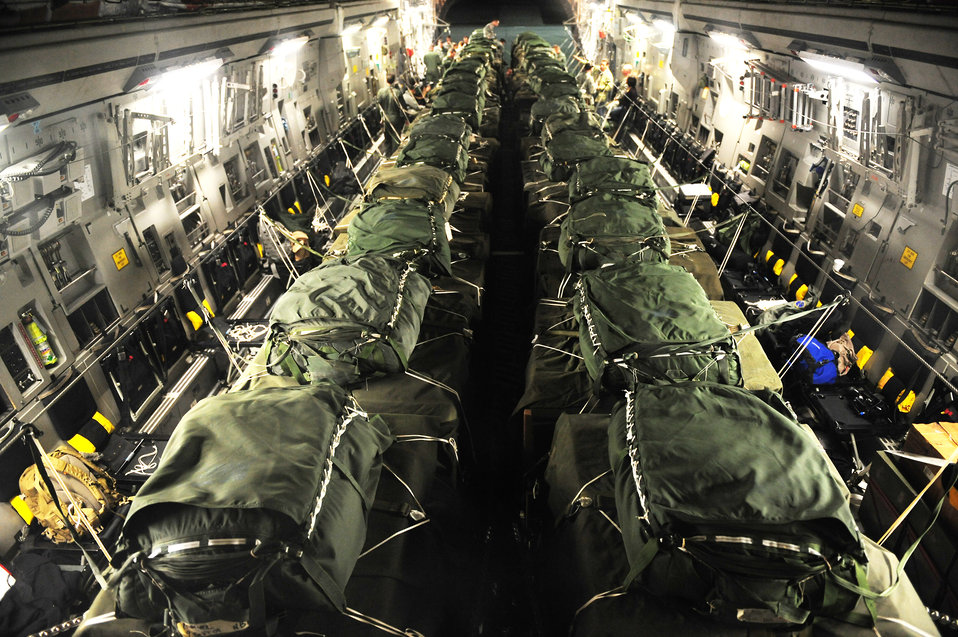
Meals, water delivered for Haiti relief

A C-17 Globemaster III from the 437th Airlift Wing at Charleston Air Force Base, S.C., is loaded with 40 container delivery system bundles totaling 67,800 pounds of Meals, Ready to Eat and bottled water before an air delivery mission departing Pope AFB, N.C., in support of Operation Unified Response Jan. 21, 2010. Pope AFB acted as a staging point for the C-17 aircrew.